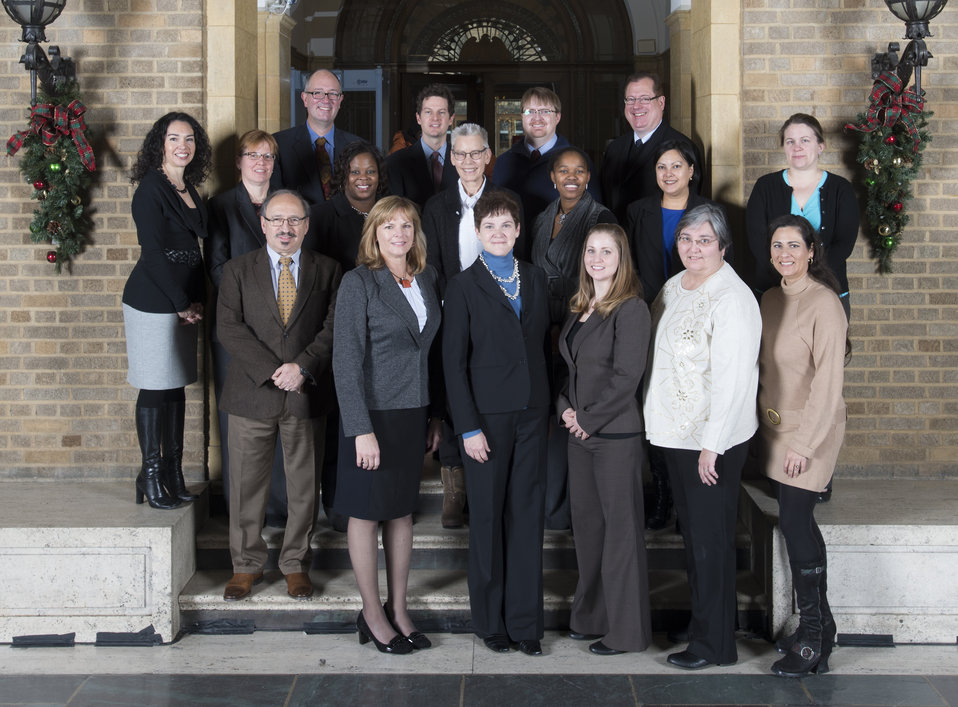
Agriculture Deputy Secretary Krysta Harden stands with the Supplemental Nutrition Assistance Program (SNAP) Stewardship Solutions Project Team, Food and Nutrition Service from Alexandria, VA on the patio at the U.S. Department of Agriculture (USDA) in Washington, D.C. on Wednesday, Dec. 11, 2013. The team received the award for implementing the SNAP Stewardship Solutions Project to strengthen program integrity and protect the American taxpayer's investment in the nation's critical nutrition assistance safety net.